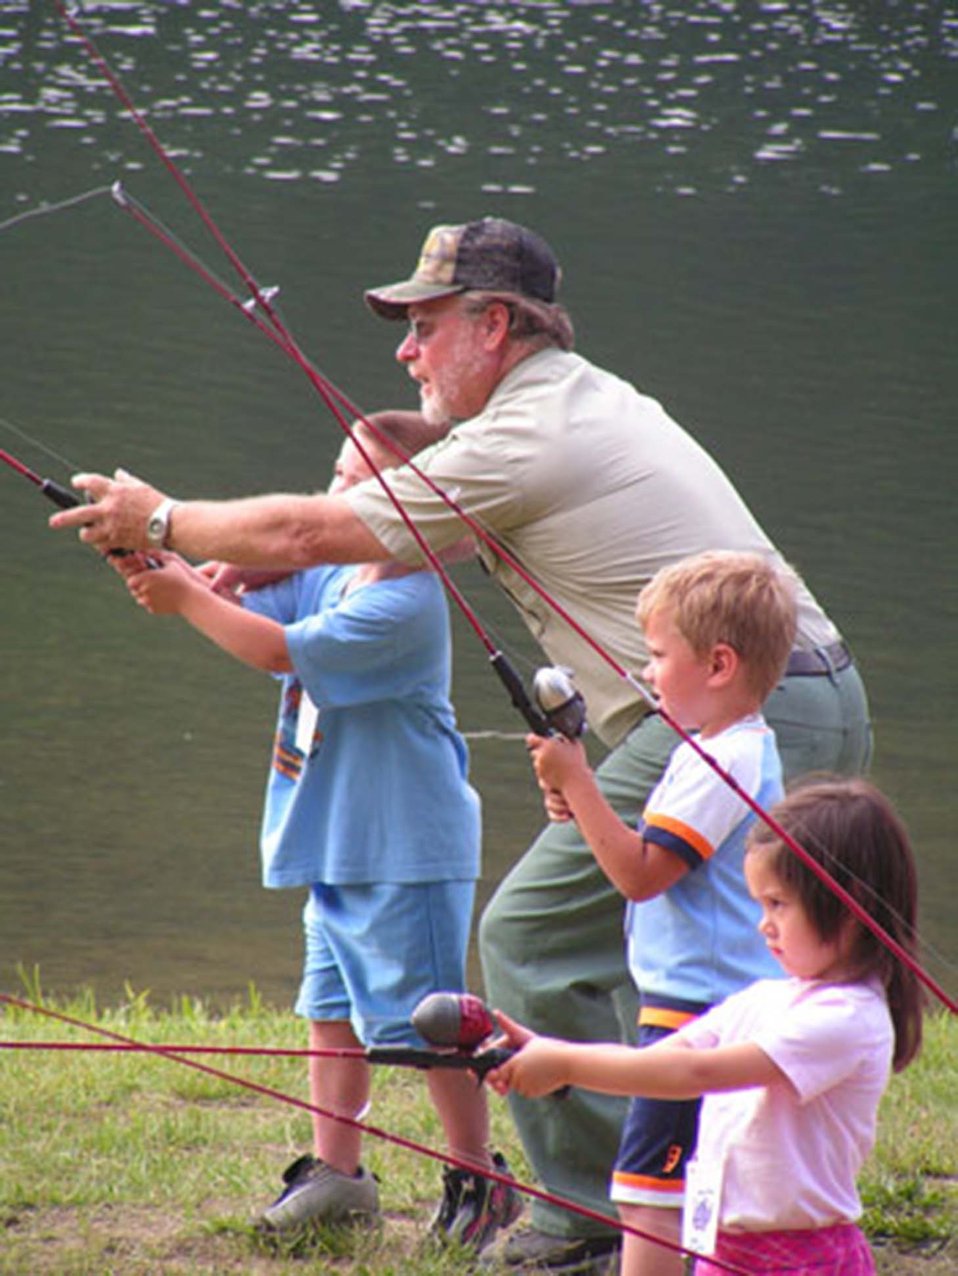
learning to fish

A U.S. Forest Service employee teaches kids how to cast fishing rods on the Hoosier National Forest in Indiana.